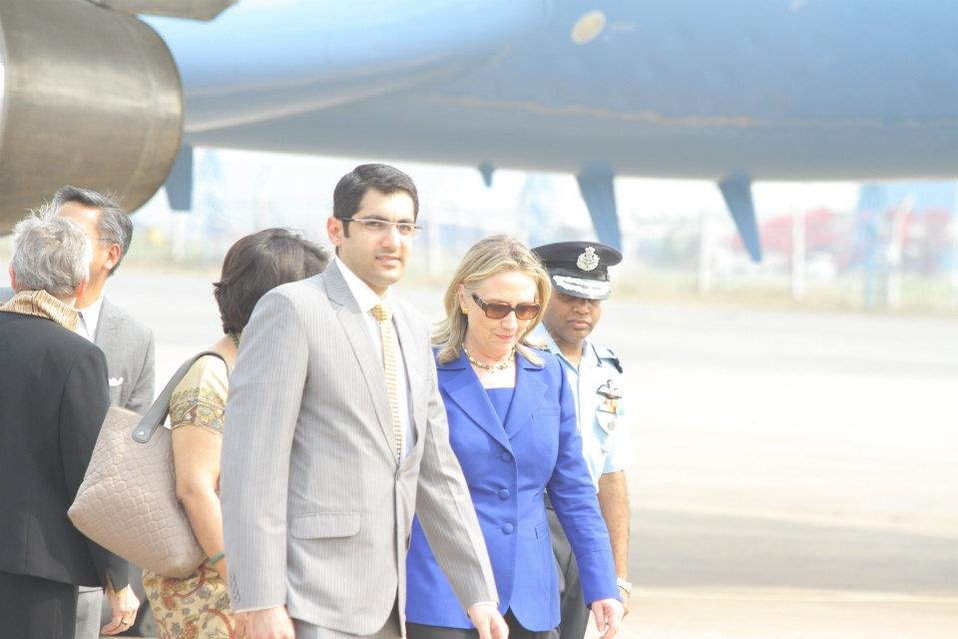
Secretary Clinton Arrives in New Delhi

U.S. Secretary of State Hillary Rodham Clinton arrives in New Delhi, India, on May 7, 2012.